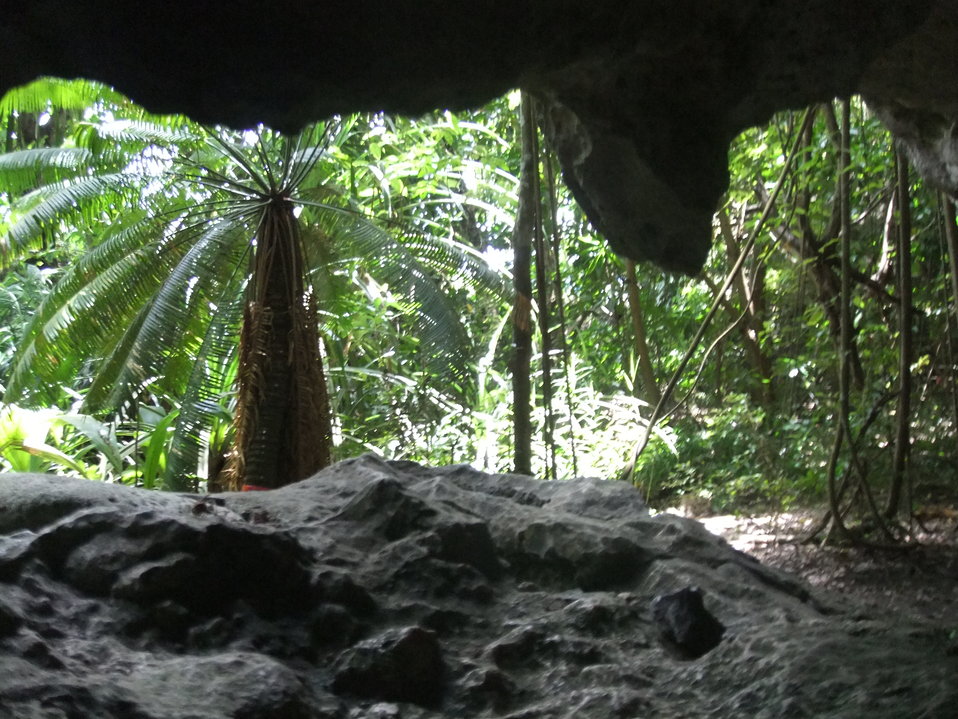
Camp Shutterbug 2011 prize winner

Guam National Wildlife Refuge, Pacific Islands
Photo: Mariana Untalan, age 10
Third place, Scenery
This photo, taken from inside the Grotto Cave on the refuge, shows an endangered native cycad (Cycas marianensis) also known as the Fadang or Federico nut. Its fruit contains a toxin that can be removed in an 8- to 10-day-long process that yields a flour used in tortillas or dumplings.